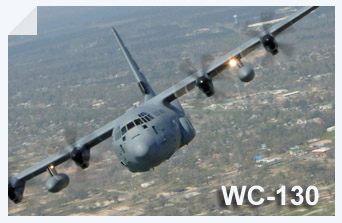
WC-130J

The WC-130 Hercules is a high-wing, medium-range aircraft flown by the Air Force Reserve Command for weather reconnaissance missions. The WC-130J is the weather data collection platform for the 53rd Weather Reconnaissance Squadron located at Keesler Air Force Base, Miss.